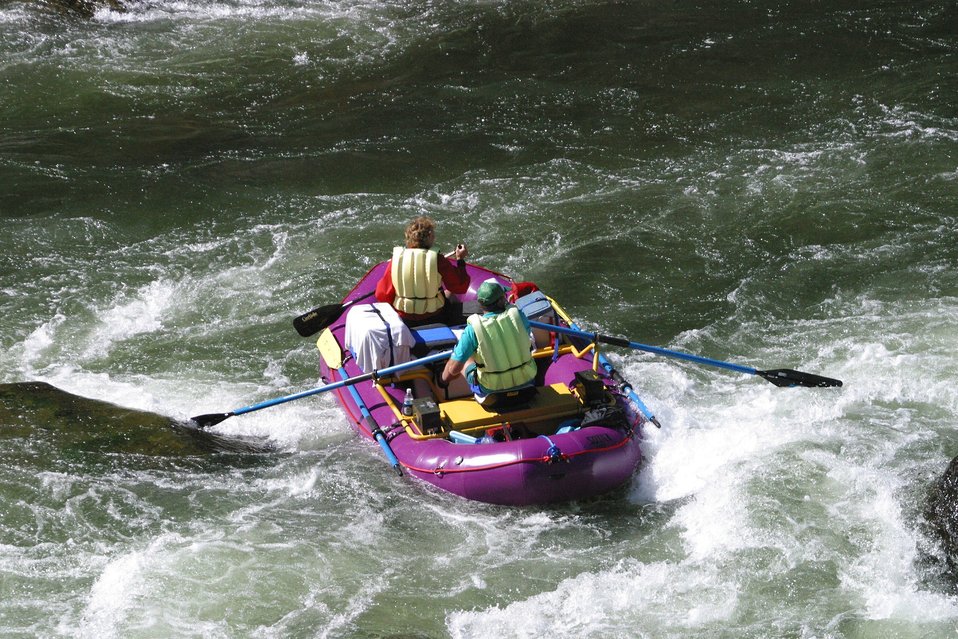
Boaters negotiate Blossom Rapids.